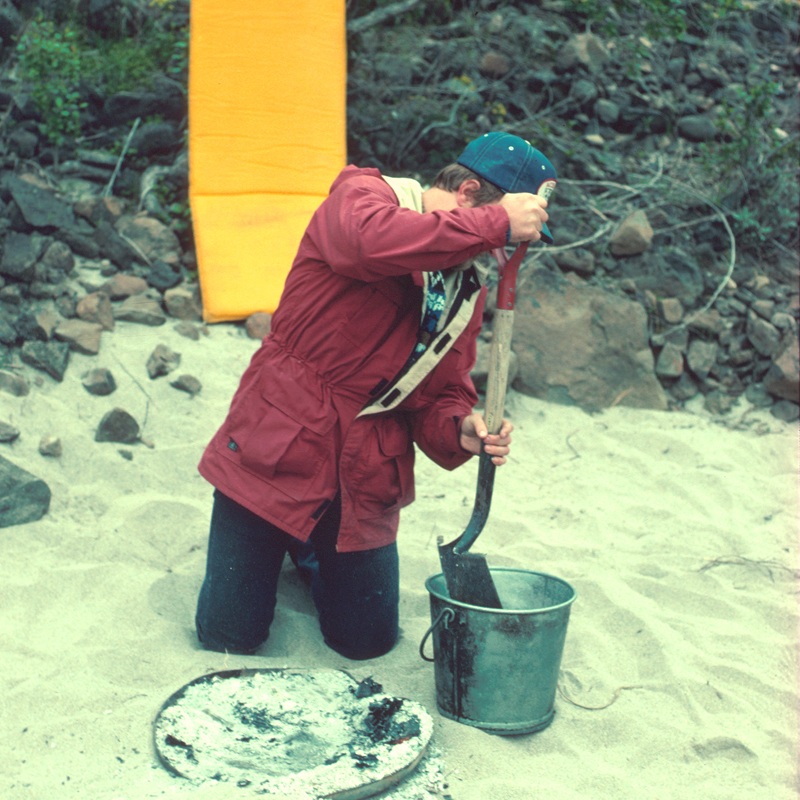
Camping Lower Salmon River Cottonwood Field Office UCSC Upper Columbia Salmon Clearwater District